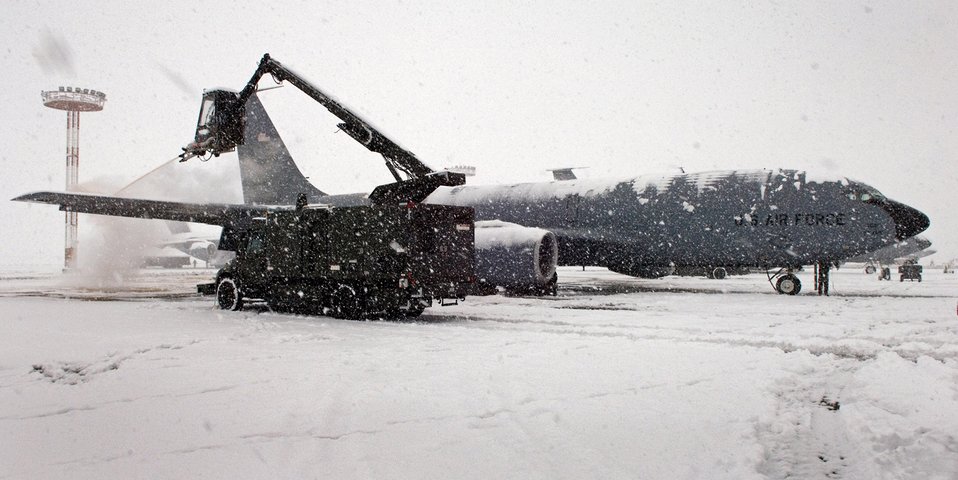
Airmen keep misson running despite subzero tempatures

Airmen clear the first snow of the year off aircraft on the flightline at Manas Air Base, Kyrgystan November 2007.